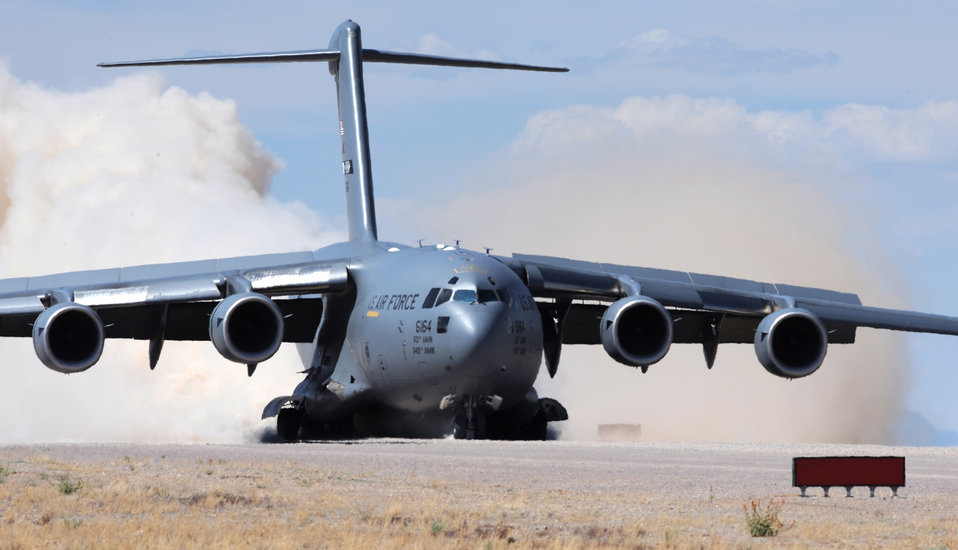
Testing mobility forces

A C-17 Globemaster assigned to Travis Air Force Base, Calif., lands on the runway May 20 while participating in the Mobility Air Forces Exercise at Nellis Air Force Base, Nev.